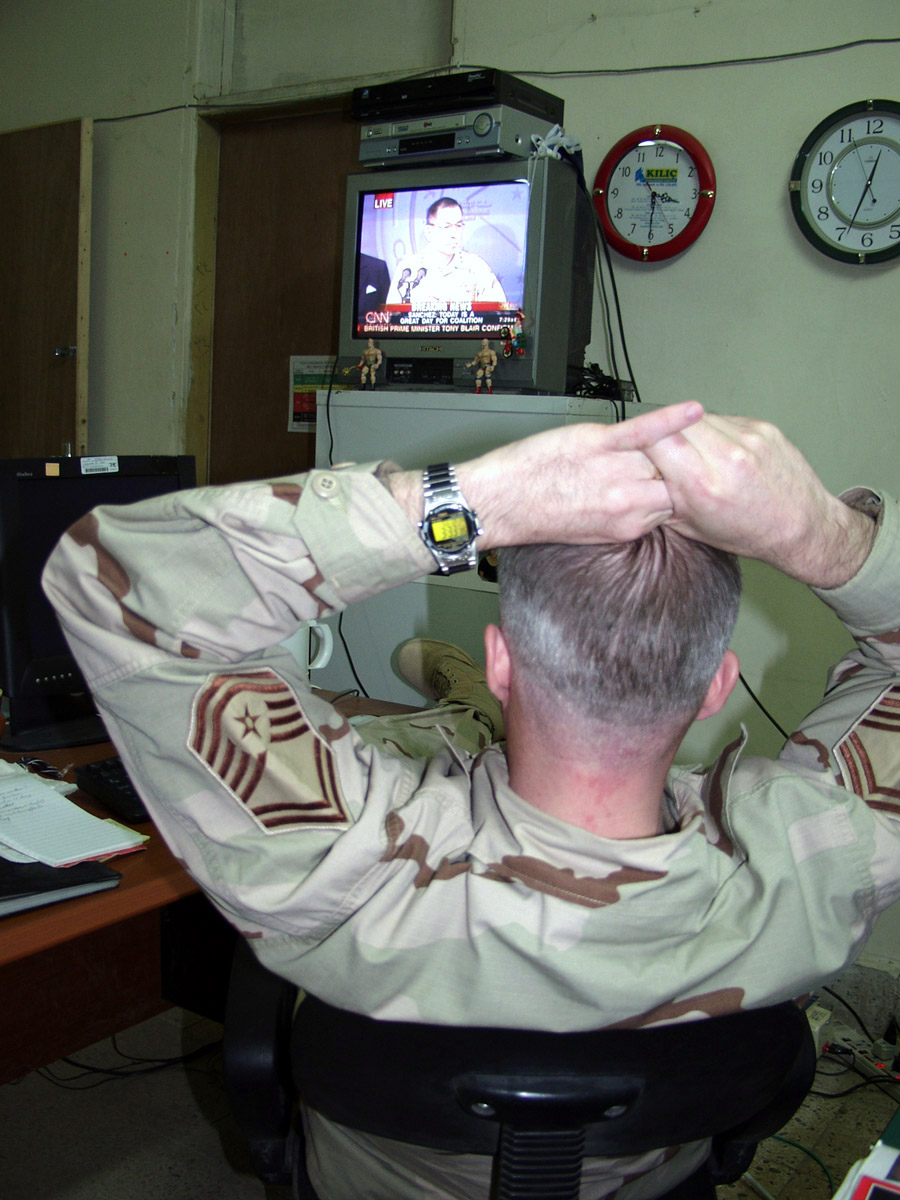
Deployed airmen react to Hussein's capture

KIRKUK AIR BASE, Iraq -- Senior Master Sgt. Eugene LaDoucer watches as Lt. Gen. Richardo Sanchez conducts a press conference. Sanchez announced the capture of Saddam Hussein on Dec. 14. LaDoucer is assigned to the 506th Air Expeditionary Group public affairs here.